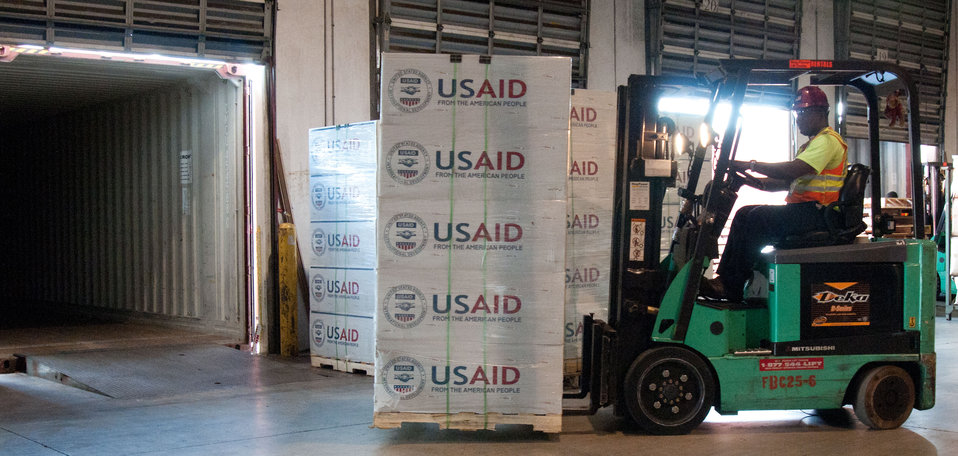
Crowley Logistics in Miami, FL on Friday, August 26, 2011 is one of three U.S. Agency for International Development (USAID) shipping and logistics facilities in the nation. In times of emergency humanitarian relief aid, they can respond with supplies delivered to aircraft at Miami International Airport within two hours. They utilize articulating forklifts, which hinge in the middle to store and retrieve pallets of supplies through narrow aisle ways. This allows for a higher density of stored supplies in the warehouse. Pallets of supplies are stacked three levels high. USAID provides humanitarian assistance through the Office of U.S. Foreign Disaster Assistance (OFDA). OFDA is the lead U.S. Government (USG) office charged with providing and coordinating USG humanitarian assistance in response to international emergencies and disasters. To achieve this, USAID works in cooperation with other USG offices such as the U.S. Department of Agriculture (USDA), and international humanitarian experts. The USDA provides food assistance to support emergency feeding programs in countries experiencing food shortages due to drought and civil conflict.